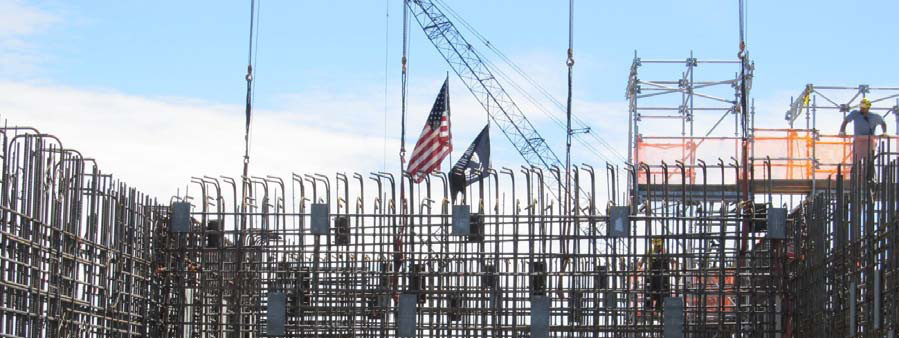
Rebar Grid at Preatreatment Facility

Complex rebar grid “curtain” for the Pretreatment Facility